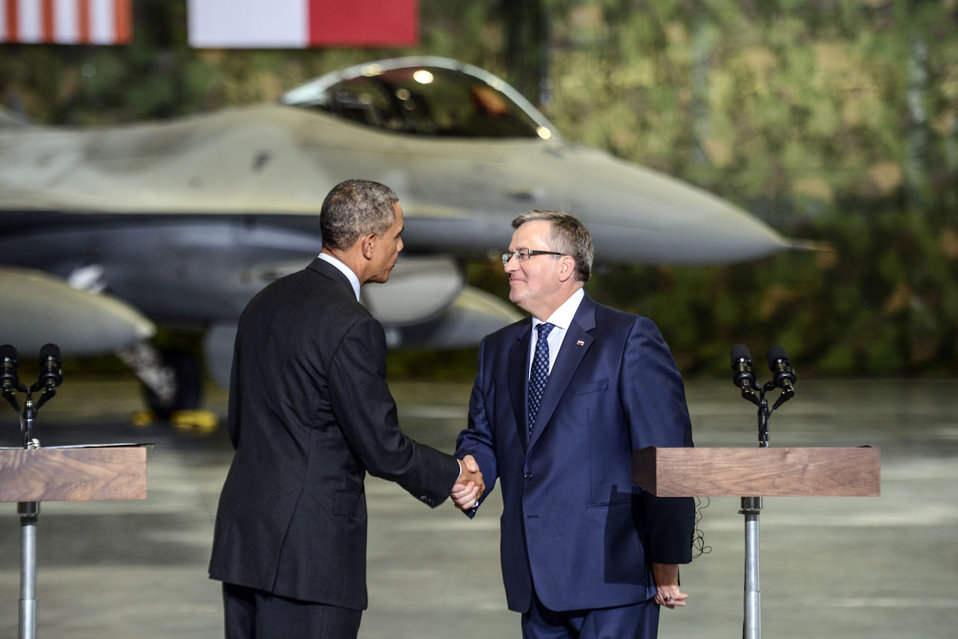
President Obama Shakes Hands With Polish President Komorowski After Speaking to U.S. and Polish Airmen

U.S. President Barack Obama and Poland's President Bronislaw Komorowski shake hands after they made statements after meeting U.S. and Polish troops at the Okecie Military Airport in Warsaw, Poland, on June 3, 2014. [U.S. Mission to Poland photo by Jakub Szymczuk]